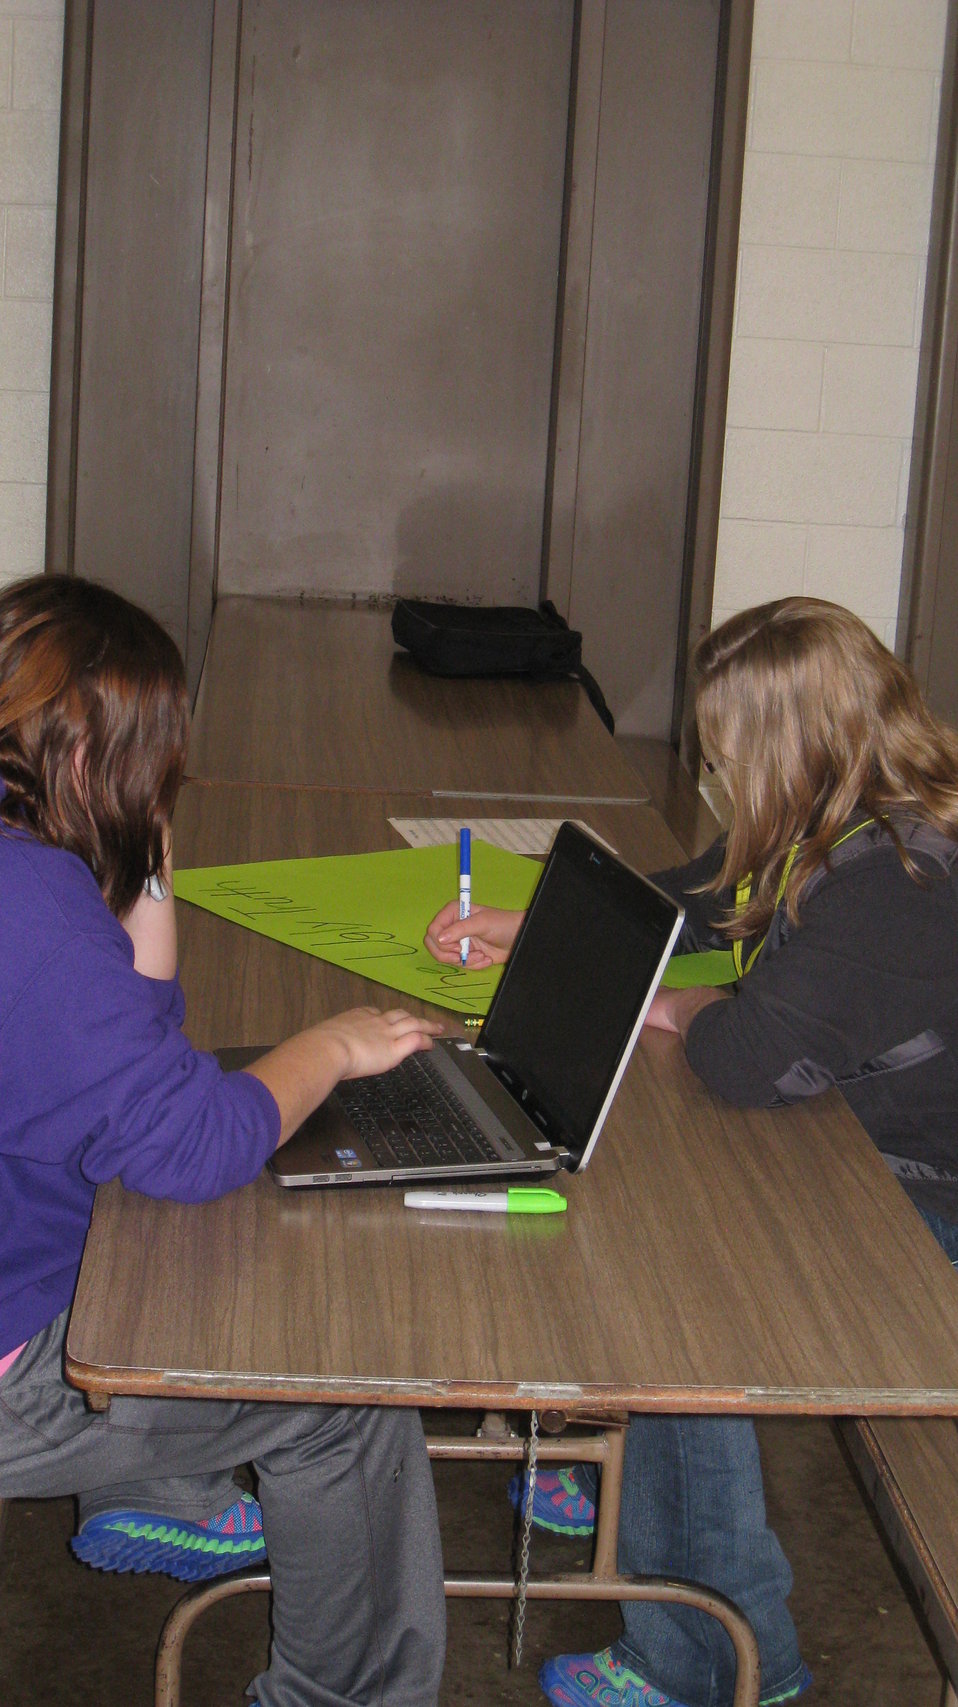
Teen Promote NDFW

Teenagers from the Van Buren County SAFE Coalition's, Youth Leadership Council (YLC) in Keosauqua, Iowa participate in various events during National Drug Facts Week, 2014.